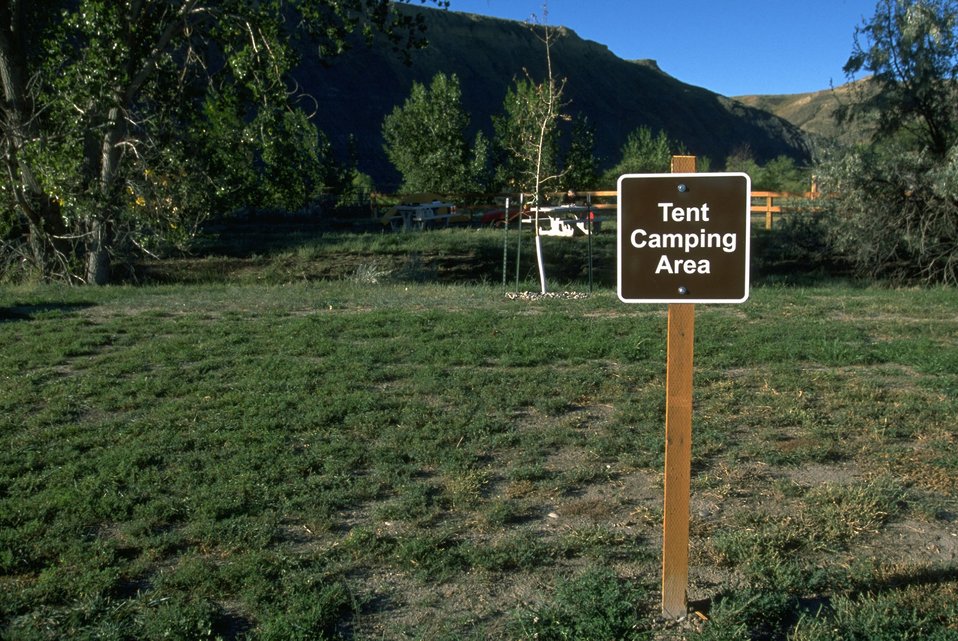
Canoe launch campgrounds at Fort Benton fairgrounds